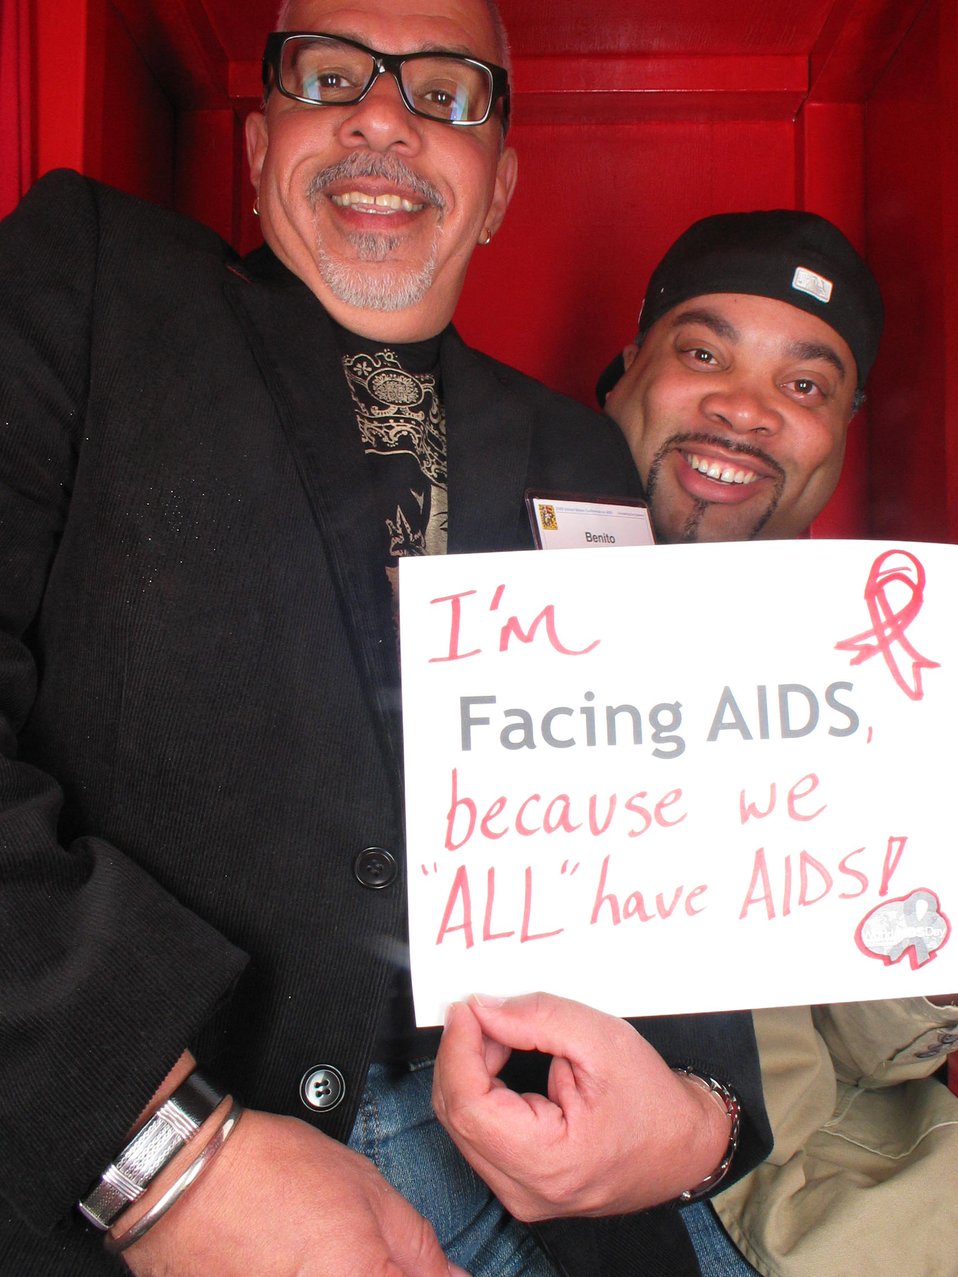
I'm Facing AIDS because we ALL have AIDS!